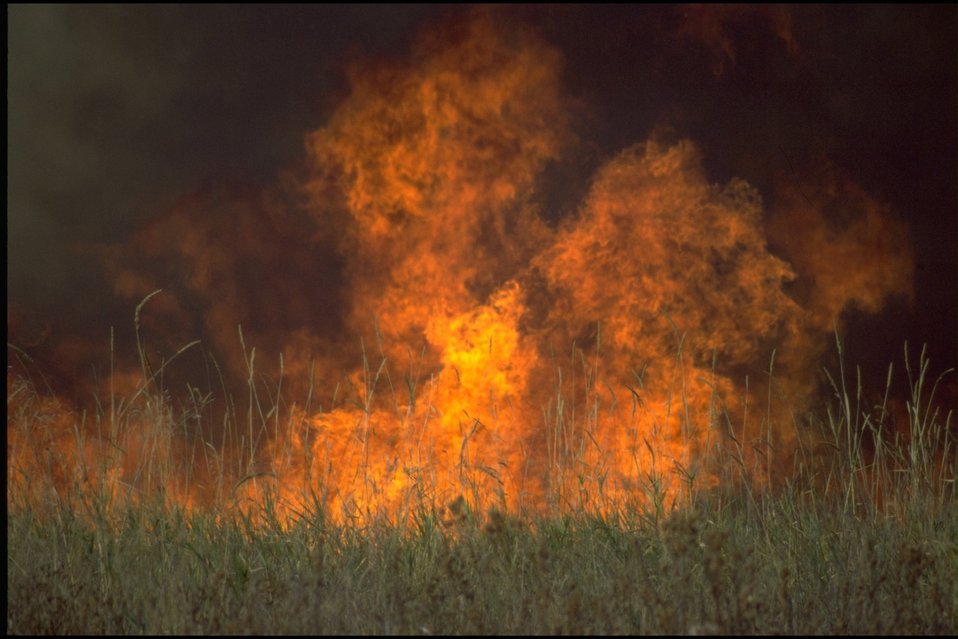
Spectra Physics Burn - Wetlands.